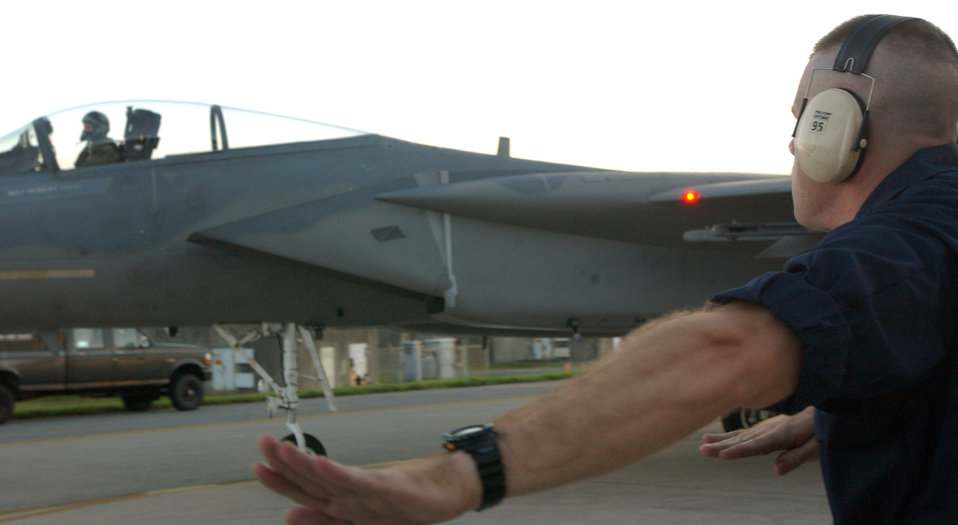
Pride Dock upgrades

KADENA AIR BASE, Japan -- Crew chief Staff Sgt. Mitchell Hardy marshals Maj. Robert Haug, in an F-15C Eagle, for a test flight here. The major was testing Pride Dock upgrades to the fighter. Sergeant Hardy is with the 18th Aircraft Maintenance Squadron and Major Haug is the director of operations with the 44th Fighter Squadron. The aircraft -- tail number 469 -- is the first Kadena fighter upgraded.